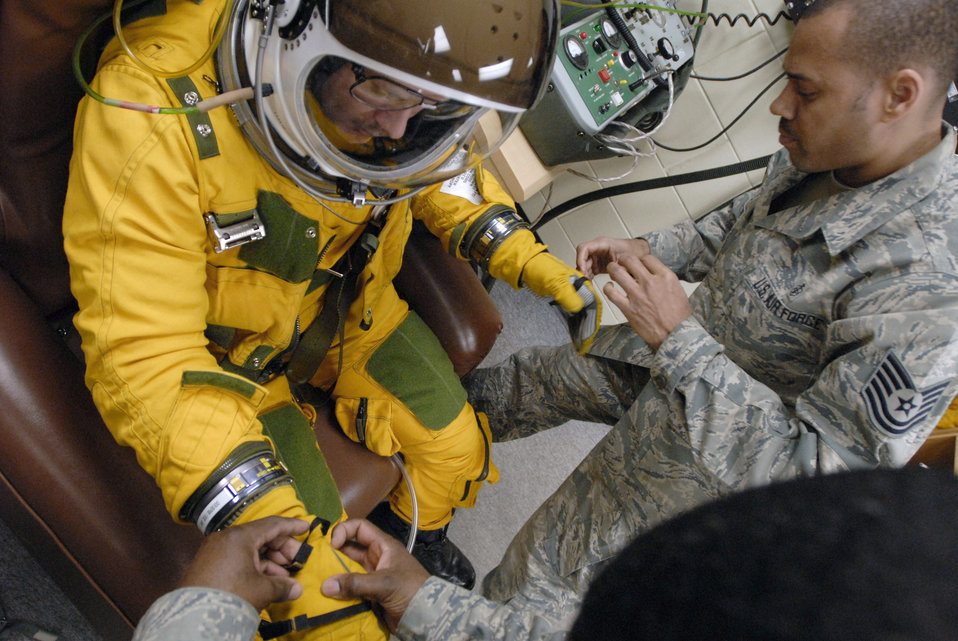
Optical bar camera

U.S. Air Force Tech. Sgt. Vontez Morrow preps U.S. Air Force U-2 pilot Capt. Beau Block for a humanitarian mission March 13, 2011. He will depart from Osan Air Base, South Korea, to capture imagery of the earthquake- and tsunami-affected areas of Japan. Sergeant Morrow and Captain Block are assigned to the 5th Reconnaissance Squadron.